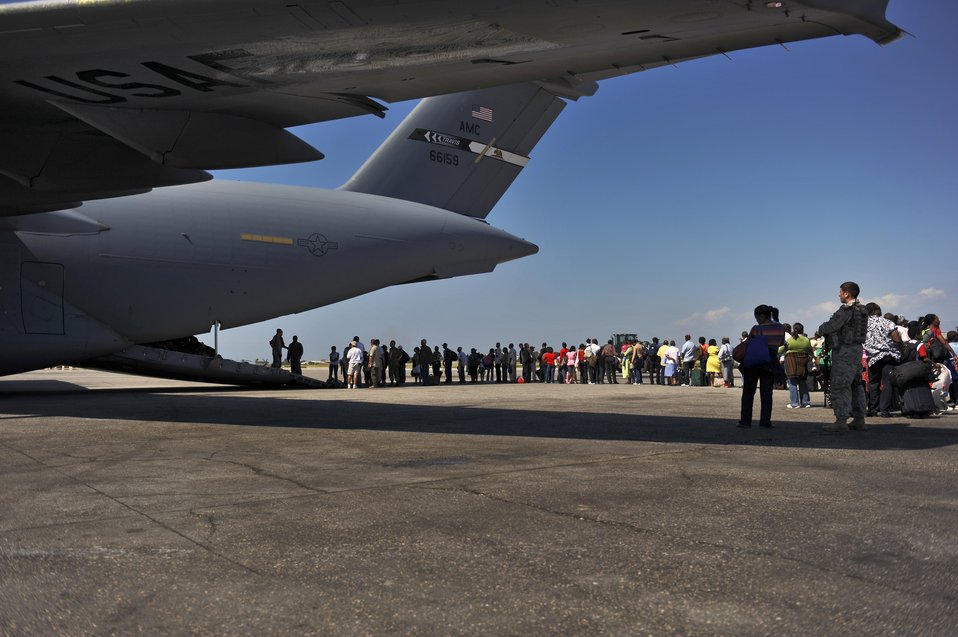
Evacuation

A group of approximately 200 Haitians wait to board a C-17 Globemaster III at Toussaint L'Ouverture International Airport in Port-au-Prince, Haiti, Jan. 23, 2010. Aircraft from all over the world fly in and out to drop off humanitarian aid and transport people out of the Haiti in the aftermath of the devastating earthquake that struck the country Jan. 12.